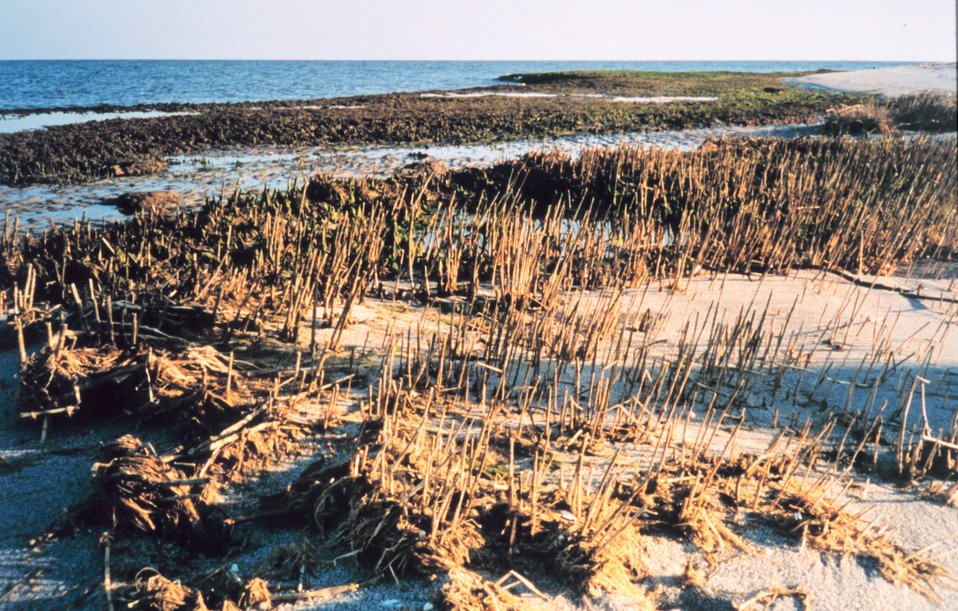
The beach at Port Isobel looking towards the Chesapeake Bay.